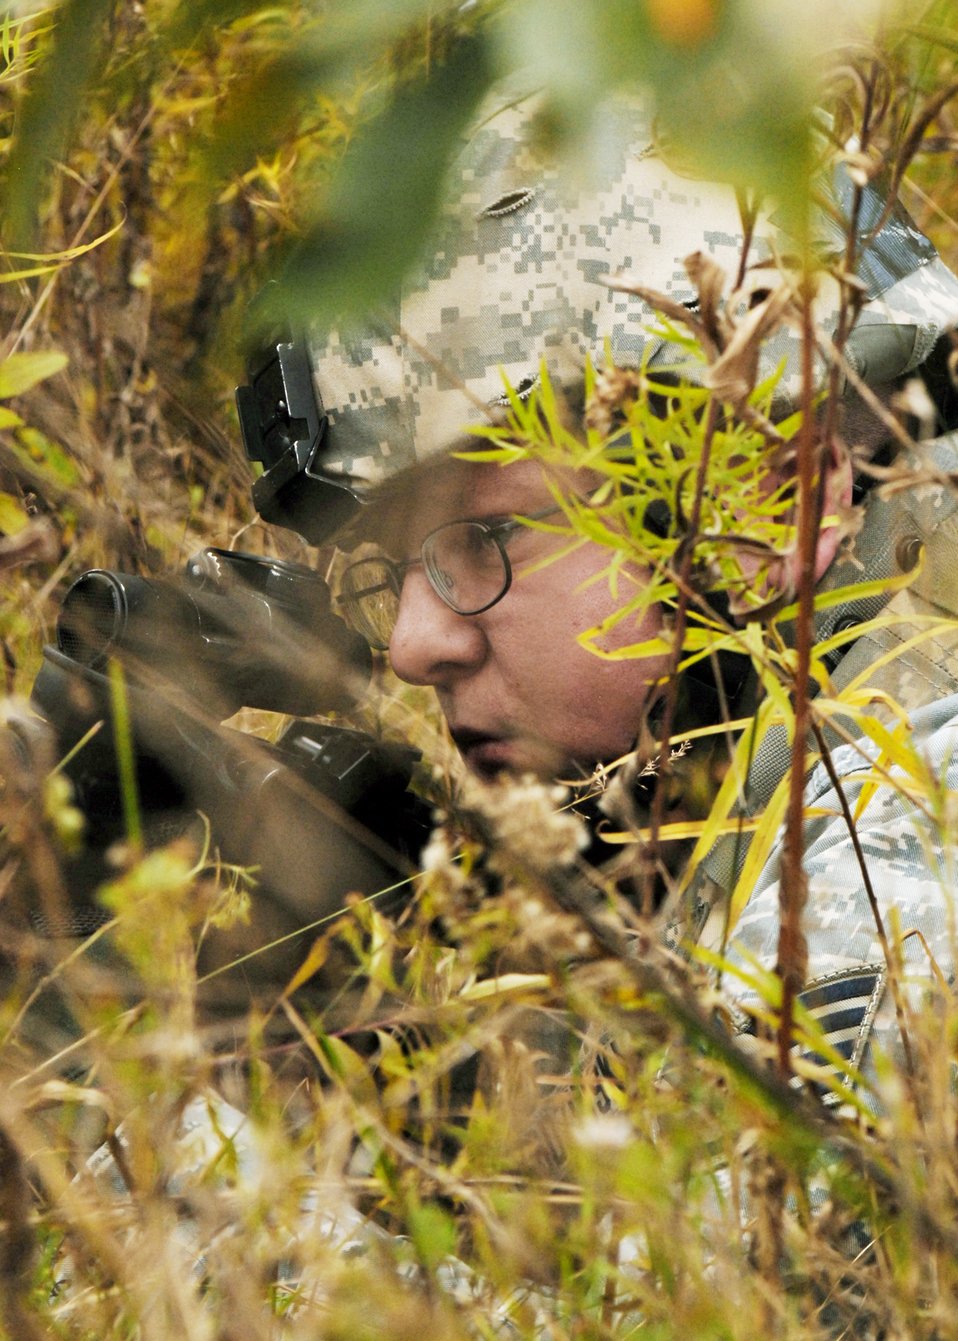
I spy

A security forces Airman searches the woods for an